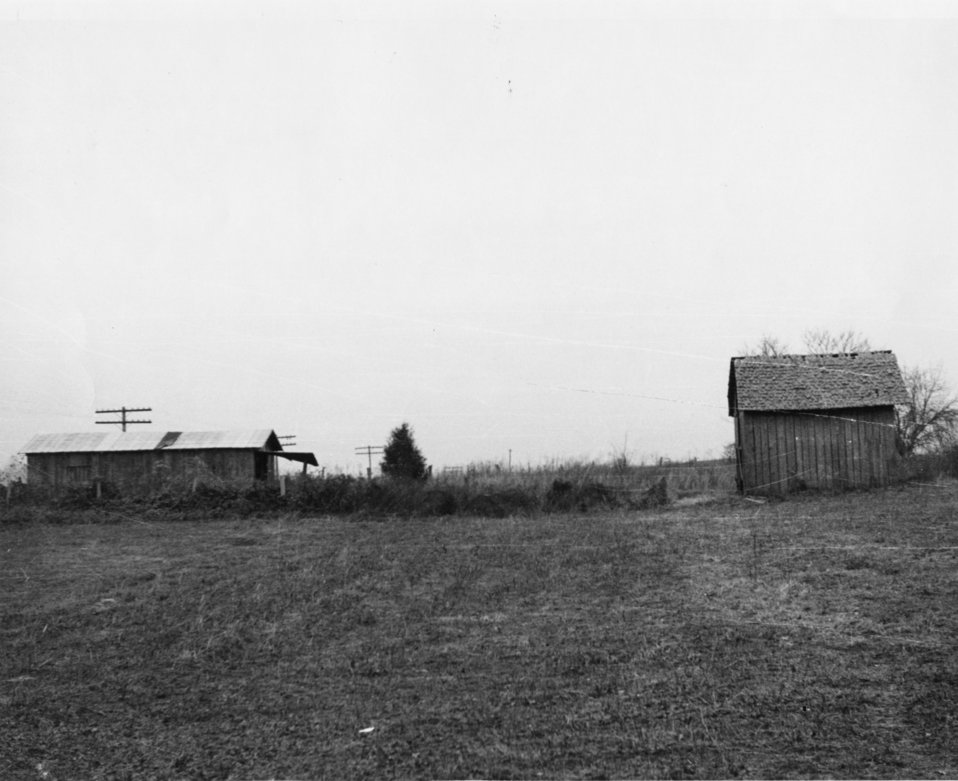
Early settlers at Oak Ridge